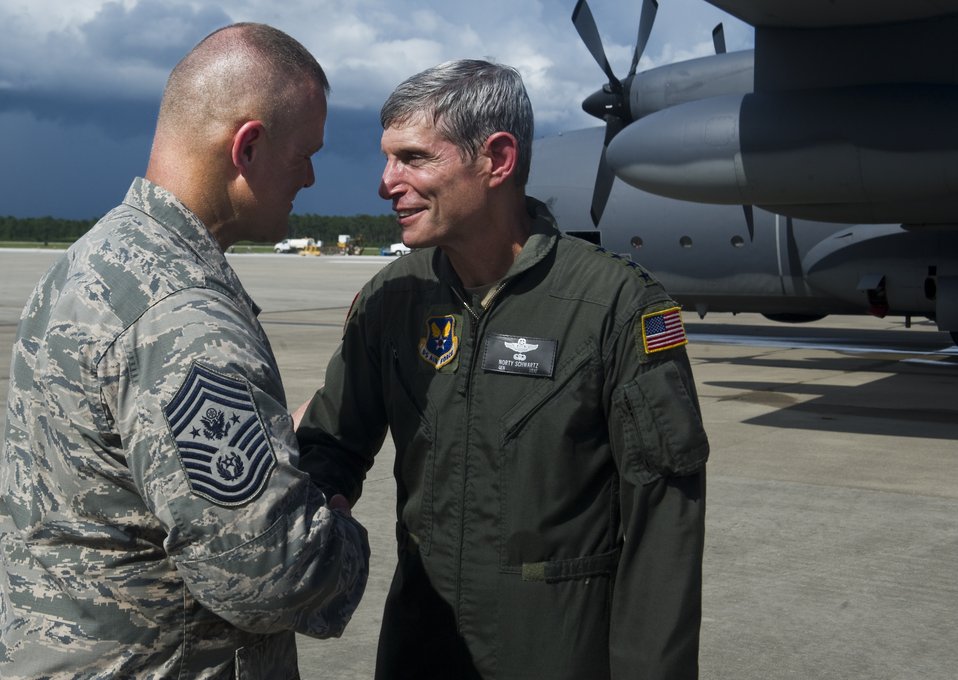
CSAF's

Air Force Chief of Staff Gen. Norton Schwartz shakes hands with Chief Master Sgt. of the Air Force James Roy, following his last flight as an active-duty officer on an MC-130E Combat Talon I, at Hurlburt Field, Fla., July 12, 2012. The MC-130E crew conducted a local training sortie during the mission. It also served as Schwartz's